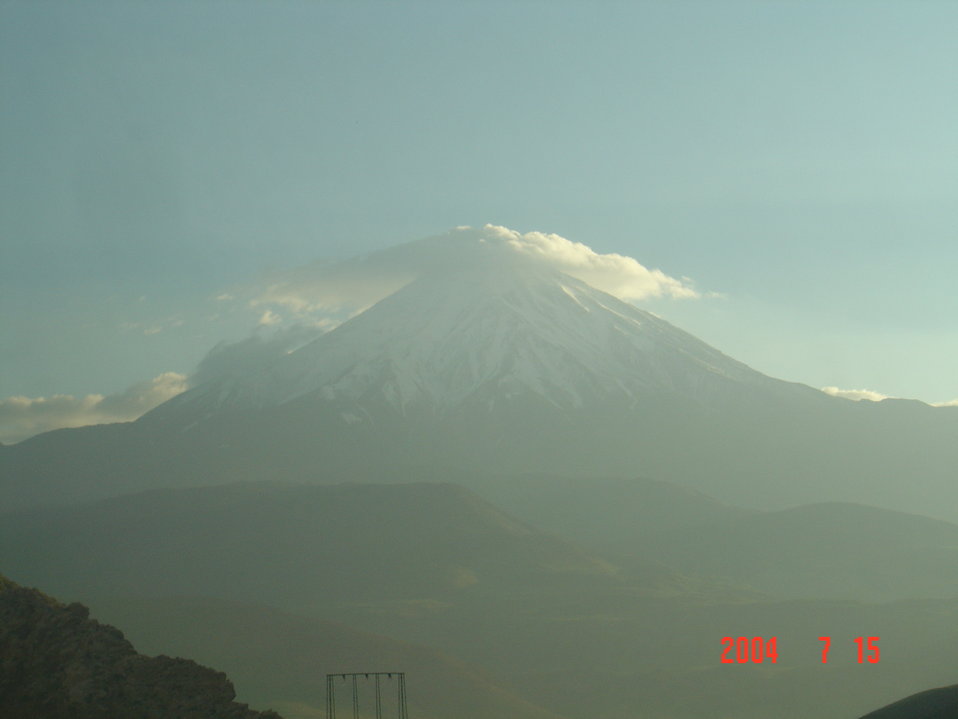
Damavand